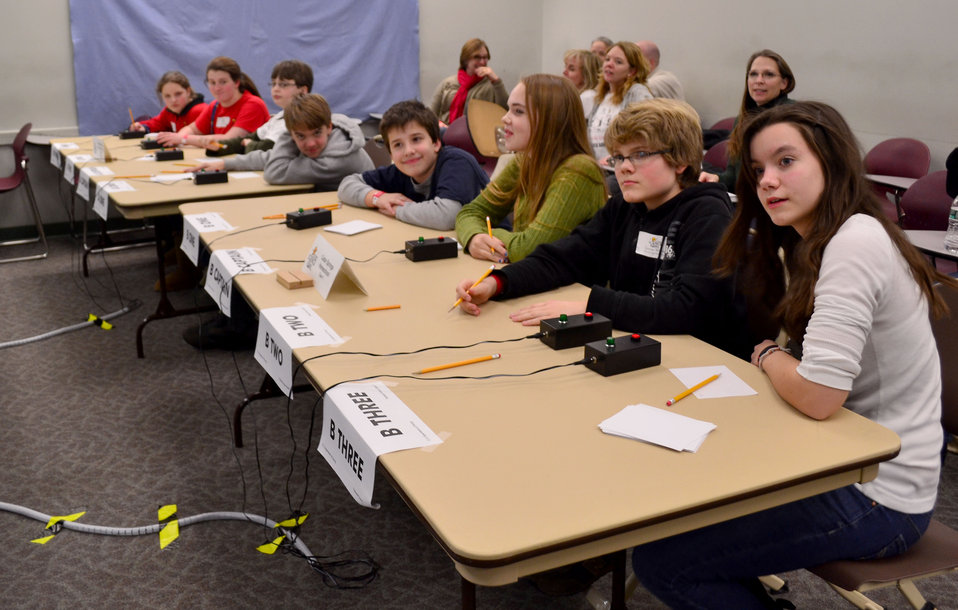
DOE Tennessee Middle School Science Bowl Oak Ridge

13-008 DOE photo Lynn Freeny DOE Tennessee Middle School Scence Bowl 2-2-2013 Oak Ridge Tennessee